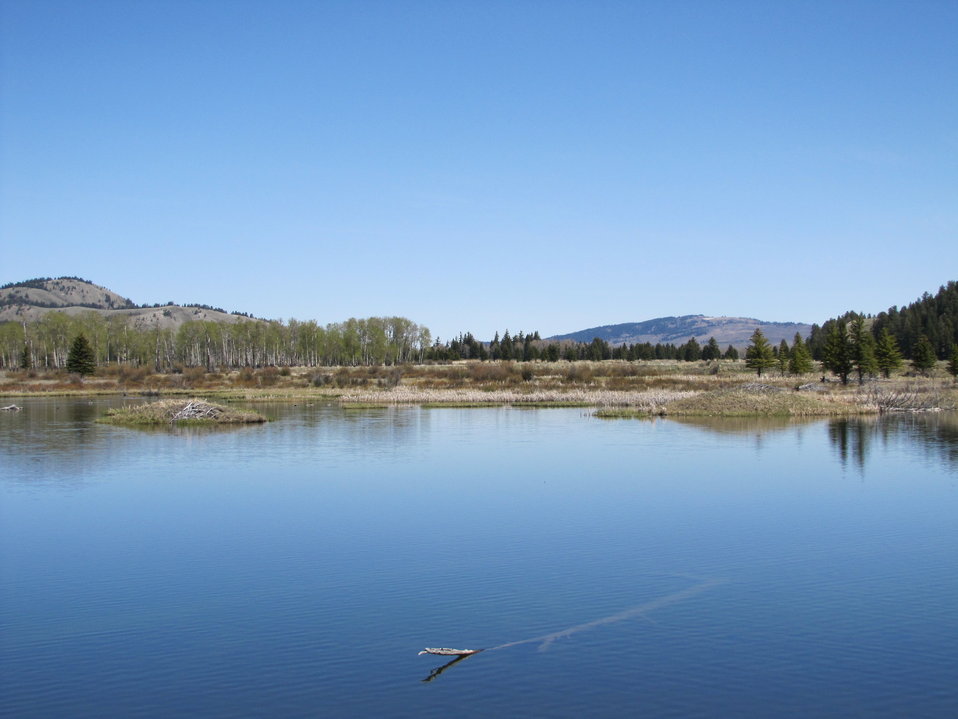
Tranquility on the Refuge's North End

The calm blue water at Romney Ponds matches the morning sky.